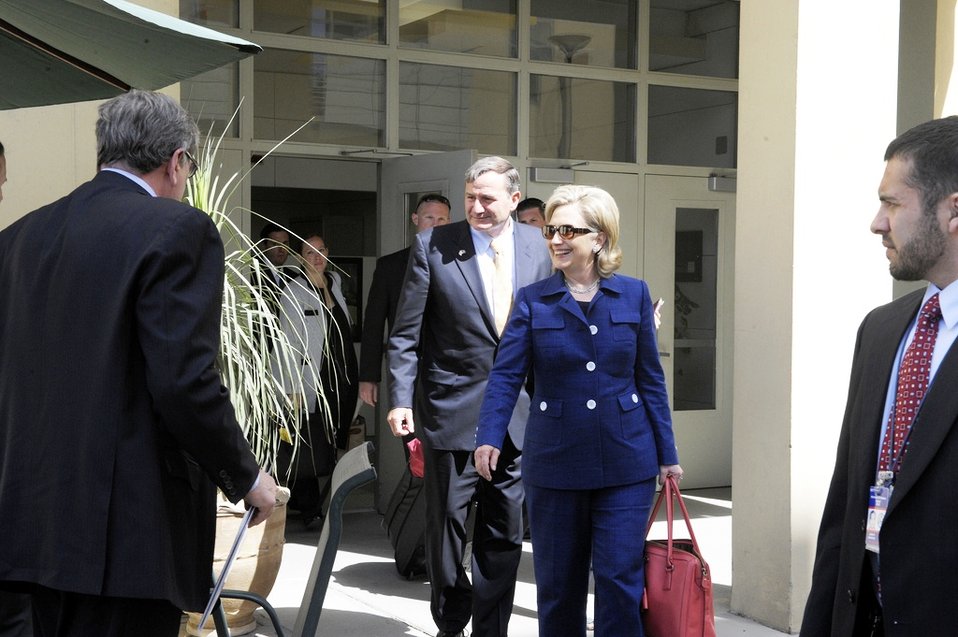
Secretary Clinton and Ambassador Eikenberry Depart a Women's Empowerment Event

U.S. Secretary of State Hillary Rodham Clinton and U.S. Ambassador to Afghanistan Karl Eikenberry depart a women's empowerment event in Kabul, Afghanistan, on July 20, 2010.